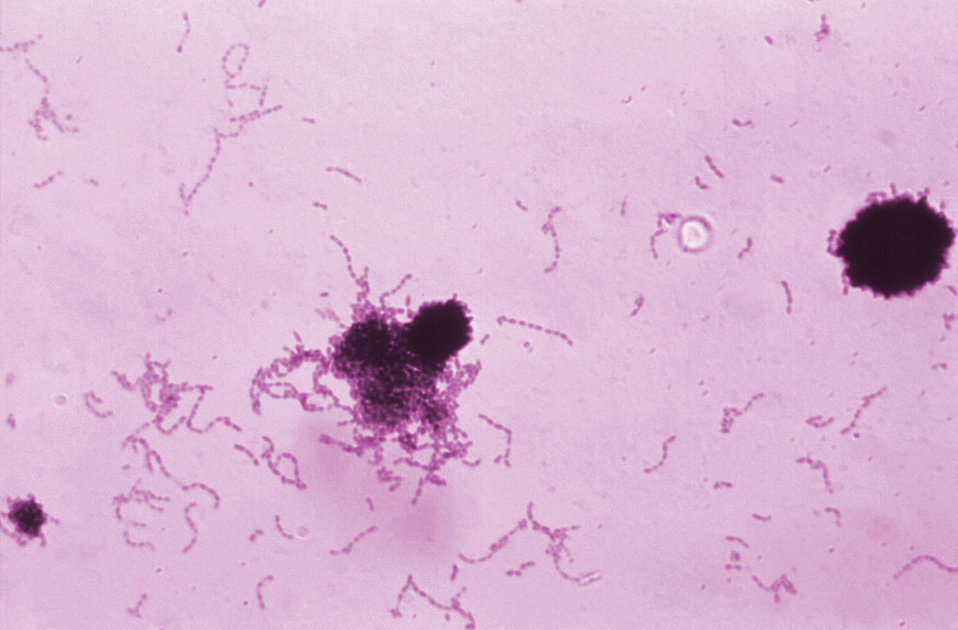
Streptococcus mutans. Gram stain.